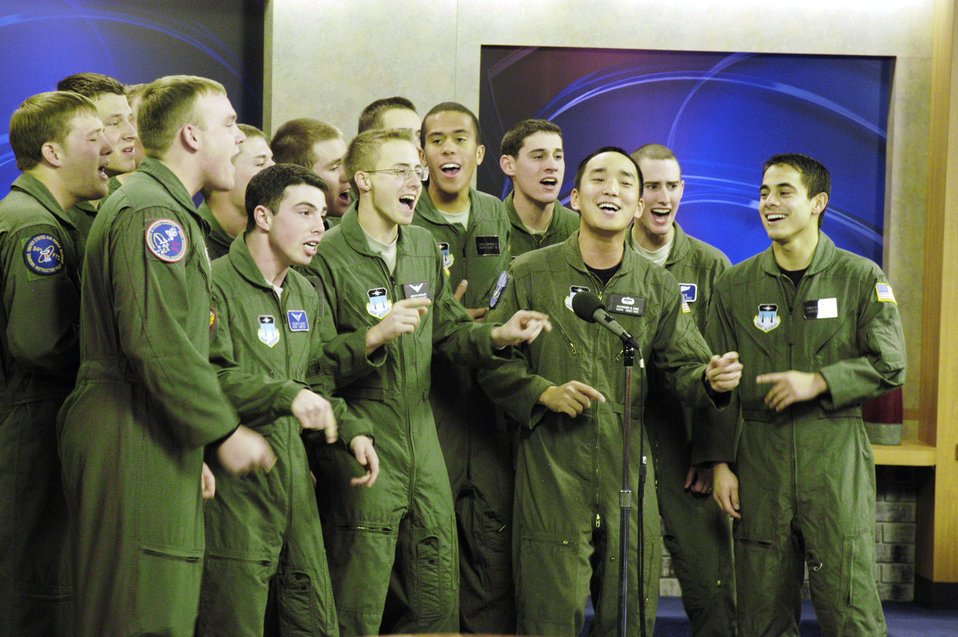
Academy's newest sound began 'In the Stairwell'

Air Force Academy Cadets with the a cappella group In the Stairwell perform for KKTV Channel 11 Dec. 11, 2009, at Colorado Springs, Colo. The group of about 20 cadets has also recently performed in a statewide competition against groups from the University of Colorado, Denver University and Colorado State University.